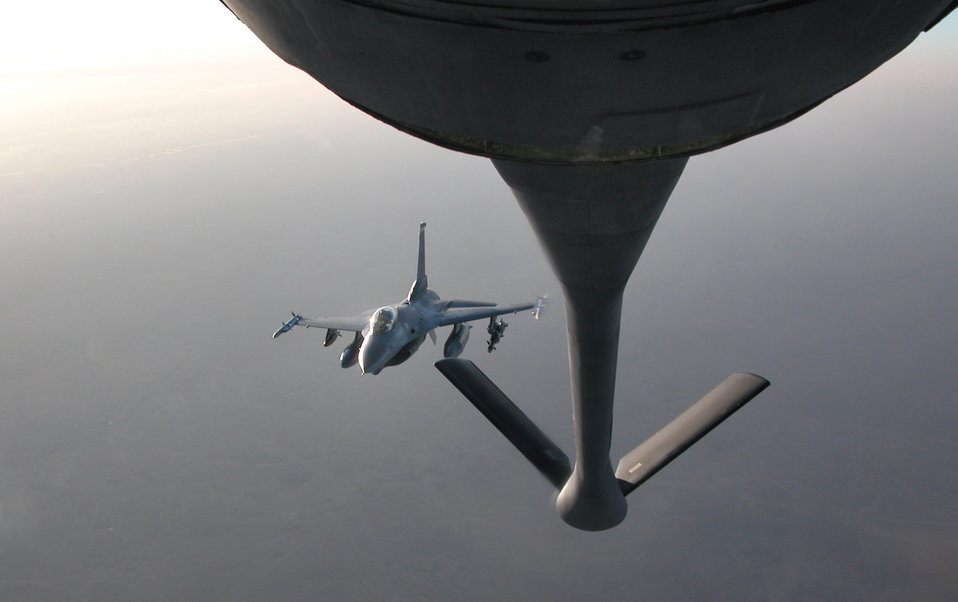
Tankers keep aircraft in the fight 24-7

An F-16 Fighting Falcon approaches a KC-135 Stratotanker over Southwest Asia. Airmen from the 340th Expeditionary Air Refueling Squadron refuel a variety of coalition aircraft throughout the entire region with aircraft that are oftentimes twice the age of the Airmen who fly and maintain them.